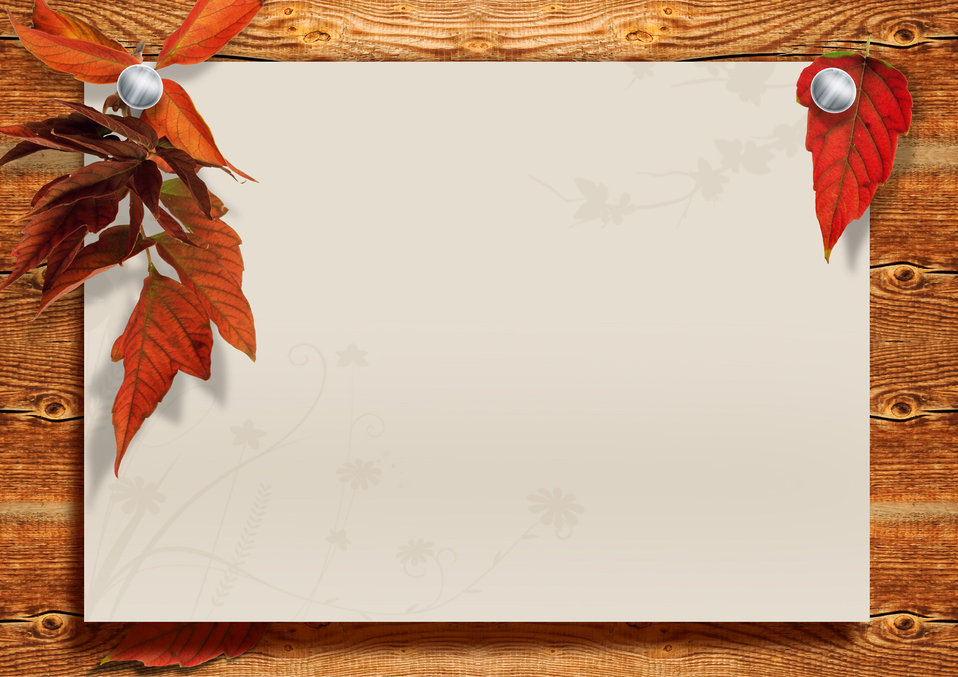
A sheet of paper on the wood

Design of the paper on the background of wooden boards with autumn leaves..